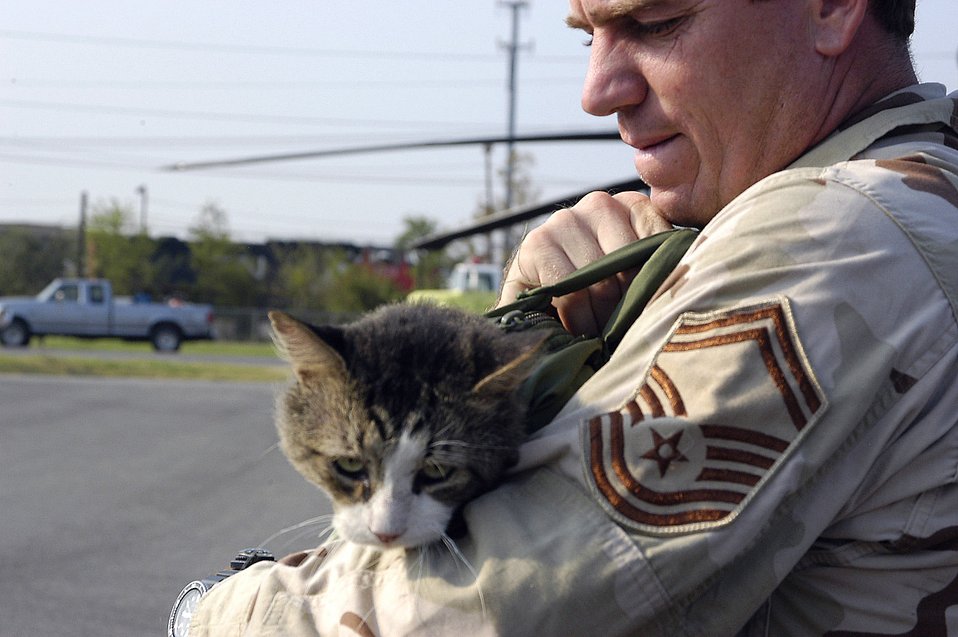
Rescuers save pets too

JACKSON, Miss. -- Senior Master Sgt. James Sanchez carries a cat he rescued from the second floor of a flooded house in New Orleans. The cat, which he named PJ, is one of 22 cats he has saved during rescue missions in support of Hurricane Katrina relief operations. Sergeant Sanchez is a pararescueman with the 306th Rescue Squadron from Davis-Monthan Air Force Base, Ariz.